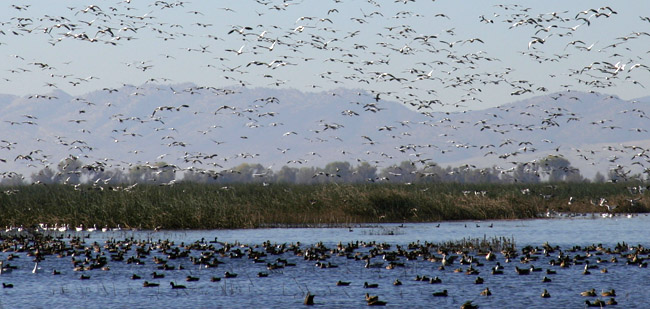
Waterfowl at Sacramento National Wildlife Refuge